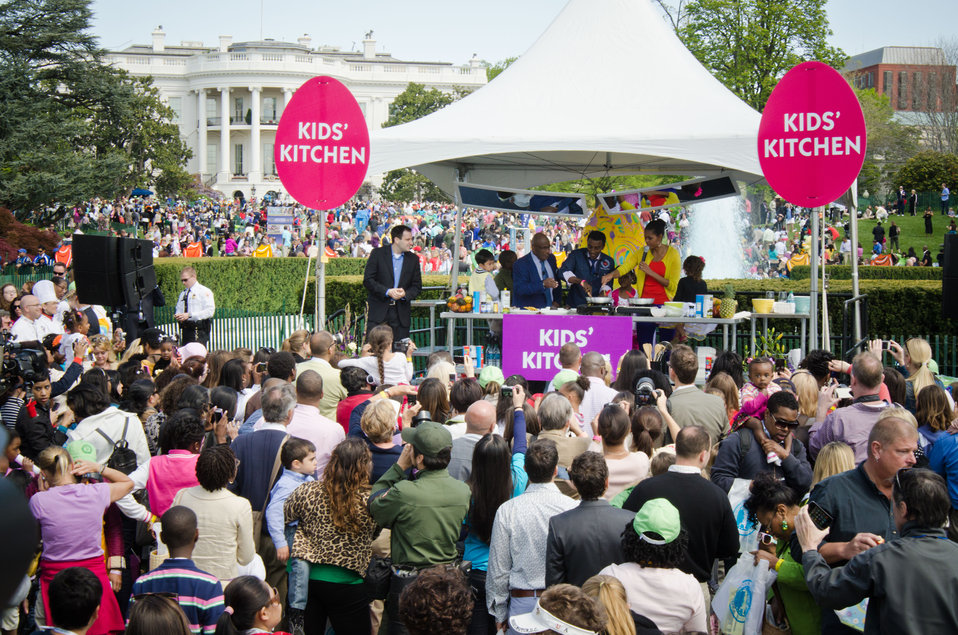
Weather and feature anchor NBC TODAY Show Al Roker (left), Chef Marcus Samuelsson (center) and First Lady Michelle Obama (right), prepare Shrimp Salad and Vegetable Tacos at the “Kids’ Kitchen” activity center led by the White House chefs and celebrity guest chefs at the White House Easter Egg Roll on Monday, April 9, 2012 in Washington, D.C. This year’s Easter Egg Roll is the 134th year of the largest annual public event held at the White House. This year’s theme is “Let’s Go, Let’s Play, Let’s Move!” The theme is the emphasis of First Lady Michelle Obama’s Let’s Move initiative promoting health and wellness and encouraging children to lead healthy and active lives to solve the problem of childhood obesity. The activity center was built around the White House Kitchen Garden.